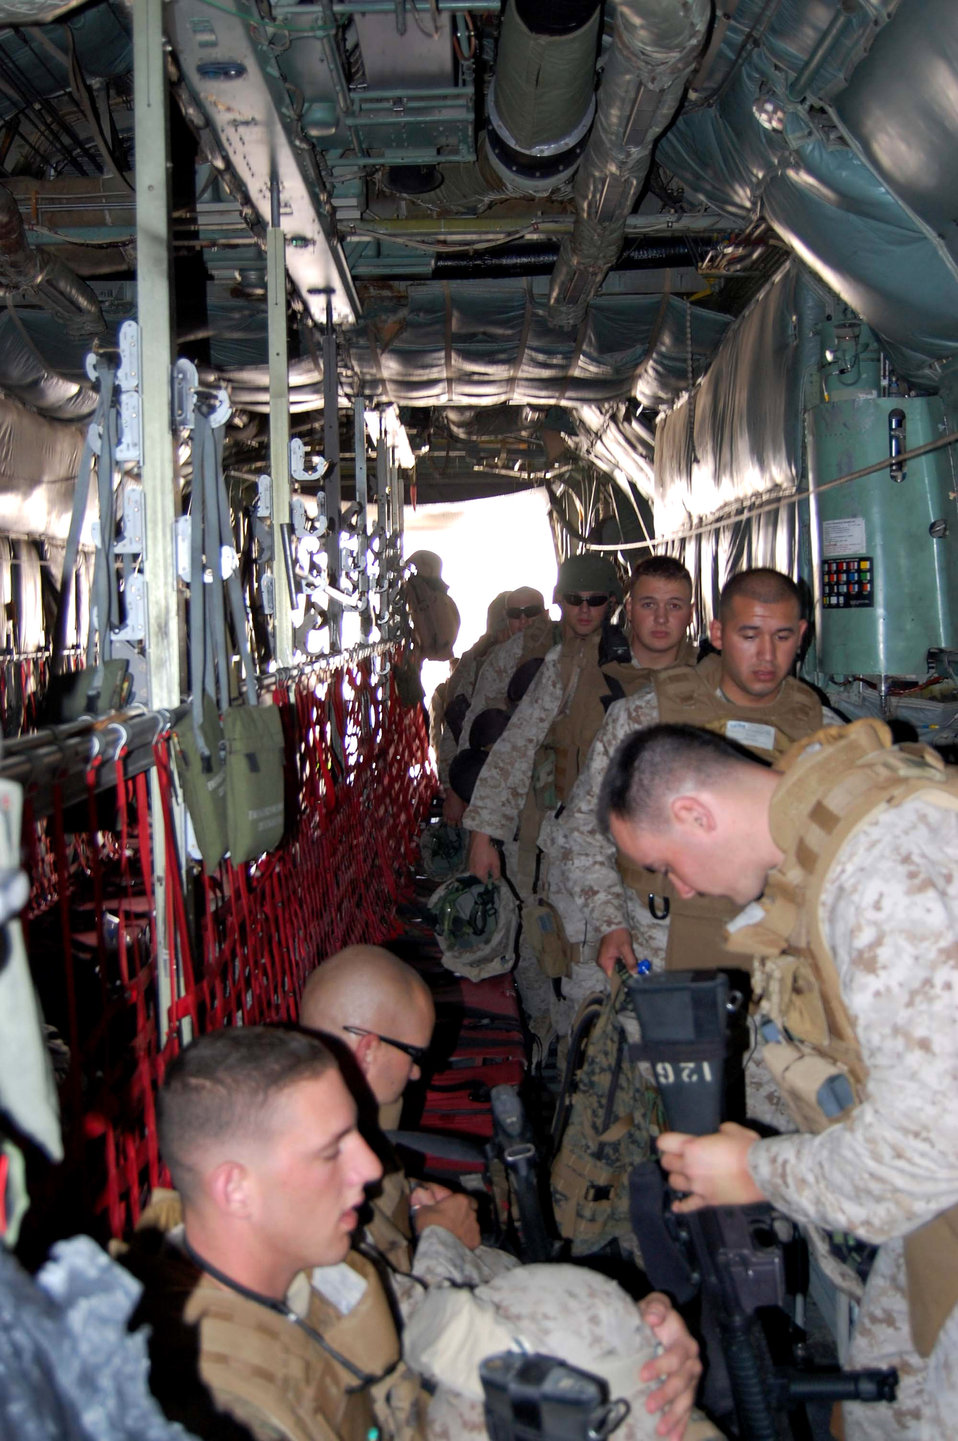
Moving the war: No pain, no gain

C-130 Hercules crew members prepare to transport Soldiers from an undisclosed location in Iraq Oct. 11. Servicemember transport is just one of the many jobs the crew performs.